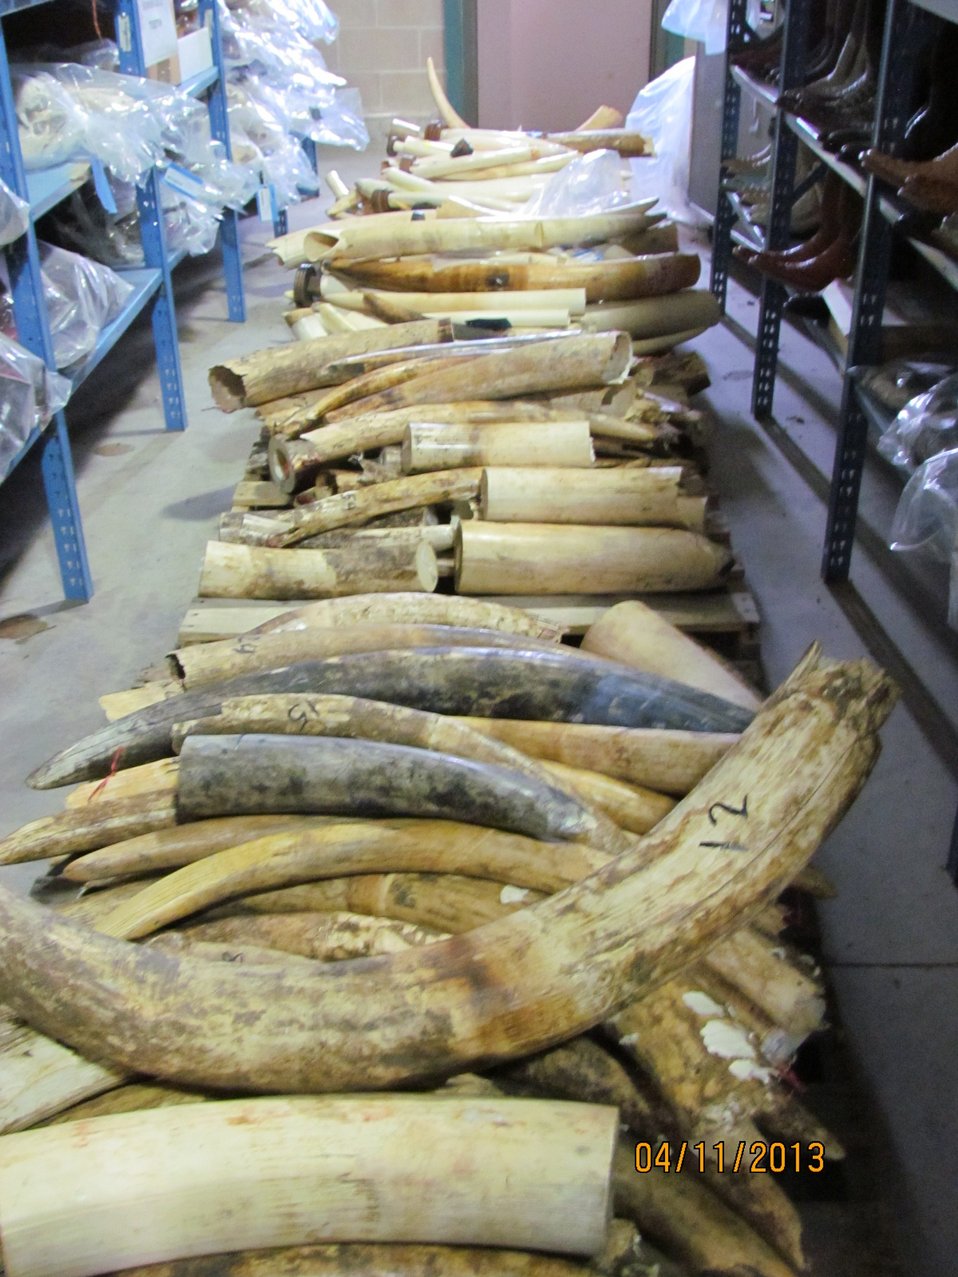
Pallet of raw tusks